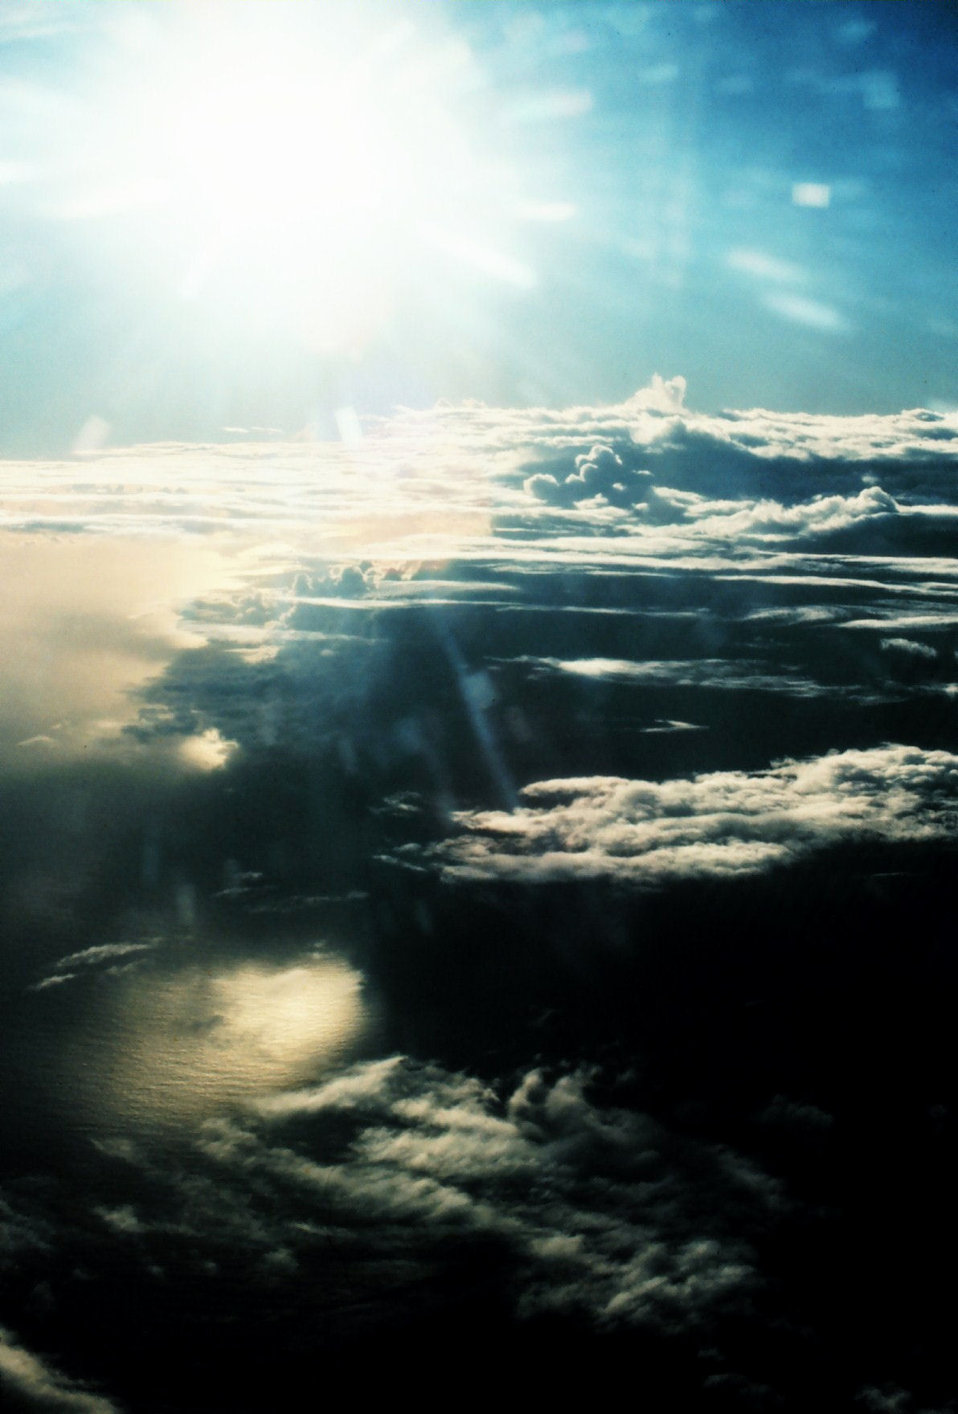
Clouds over the Big Island